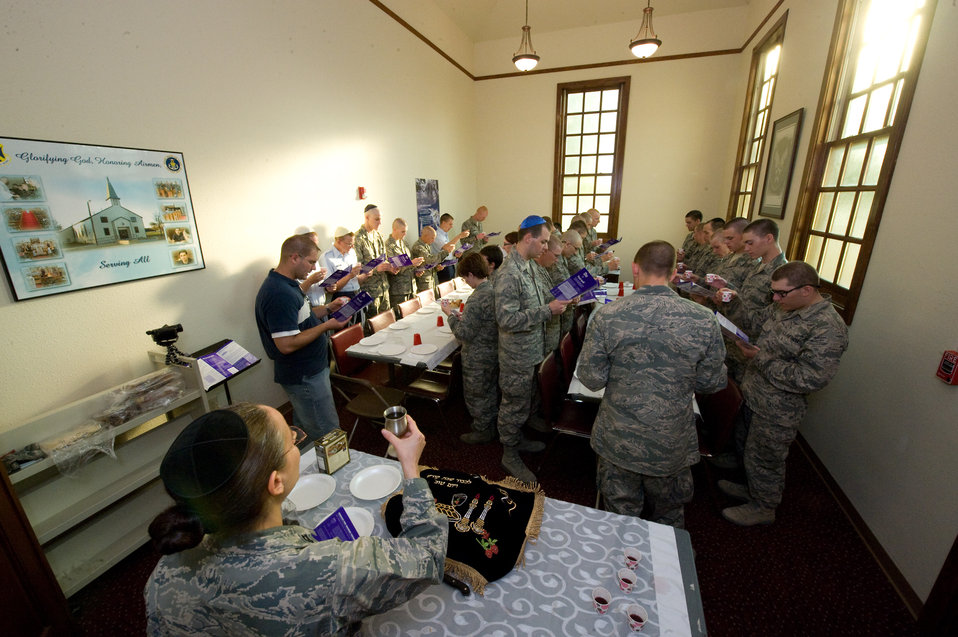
U.S. Air Force Chaplaincy

U.S. Air Force Rabbi, Chaplain, Captain Sarah D. Schechter and trainees sanctify the day with wine and saying the Kiddus on Friday, Sept. 4, 2009 at Lackland Air Force Base's Airmen Memorial Chapel. This was part of the evening le'il shabbat service. The more than 25 basic military trainees and other attendees participated in a religious education class, then Ma'ariv prayer service for the setting of the sun, followed by a meal provided by lay leaders supporting the service. Because of training schedules some ceremonies and events are earlier than traditionally held. By order of commanders, those who want to attend any or all religious services of their choosing are given full permission and opportunity to do so. Chaplain, Captain Schechter is an Operation Iraqi Freedom veteran and considers her deployment there to be one of the highlights of her career. Schechter is the first woman rabbi in the U.S. Air Force.